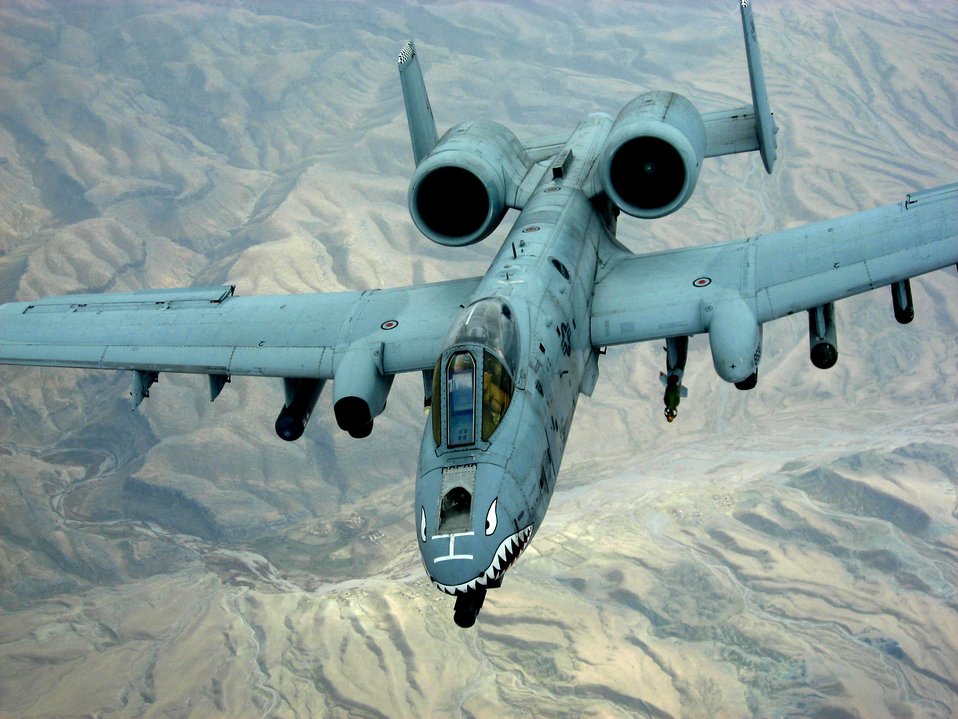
CENTAF airpower summary for Feb. 19

An A-10 Thunderbolt II, like this one, is among the various U.S. Central Command Air Forces air assets available for providing close-air support for International Security Assistance Force troops in contact with enemy forces in Iraq and Afghanistan. The A-10 is specially designed for close air support of ground forces and can be used against all ground targets, including tanks and other armored vehicles.